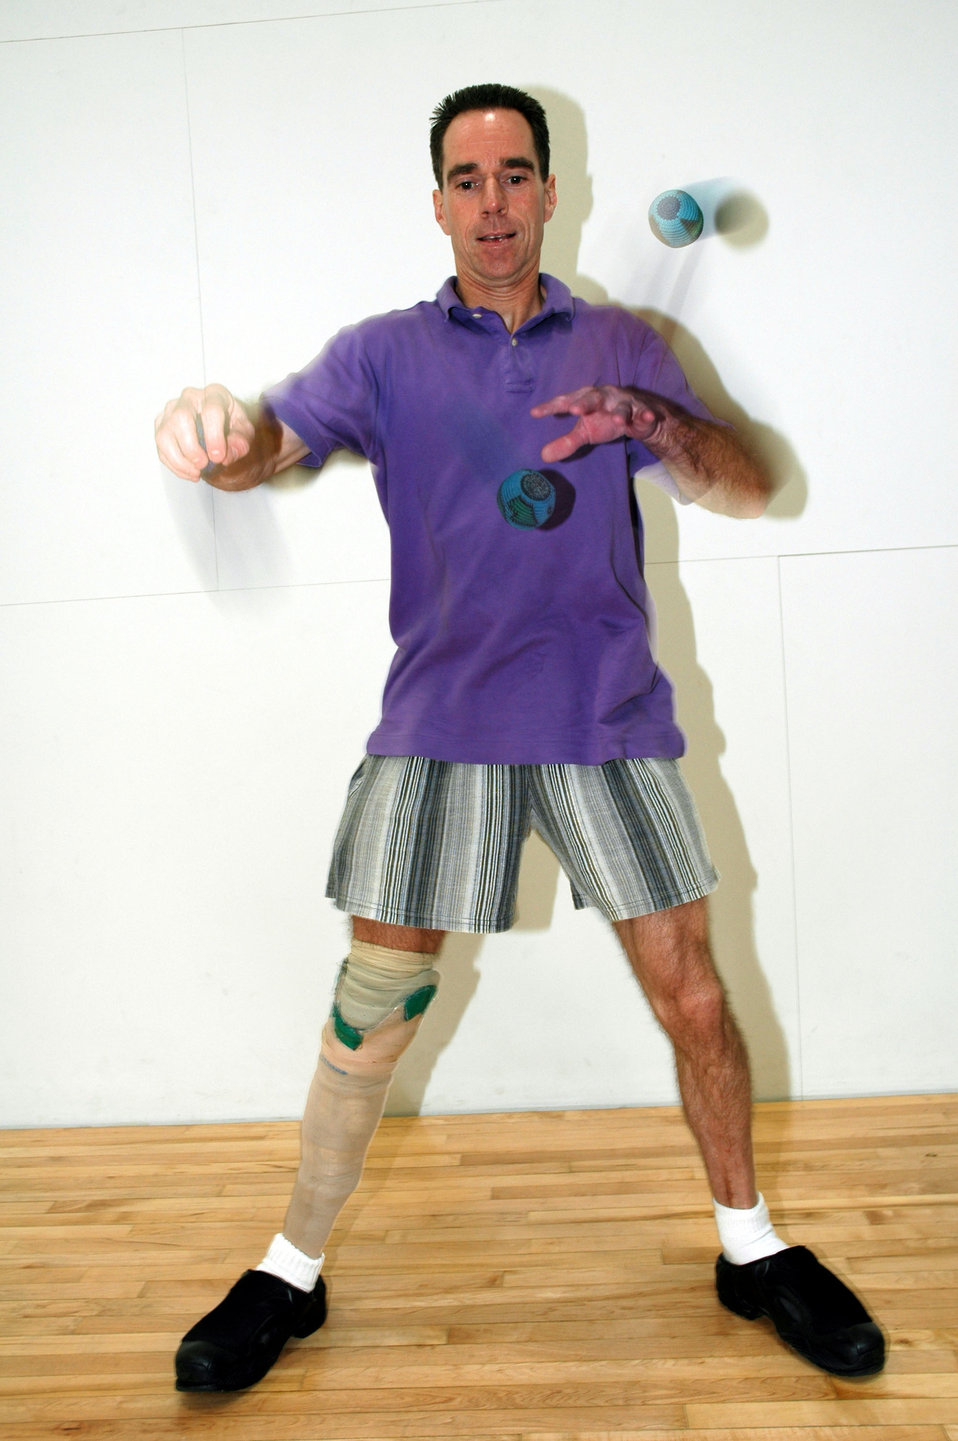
AAFES worker uses fitness center daily despite prosthetic leg

OSAN AIR BASE, South Korea -- Juggling is one of many fitness activities Terry Mallon does nearly every day. His prosthetic leg does not slow his pursuit of fitness and sports. He is an Army and Air Force Exchange Service security technician.